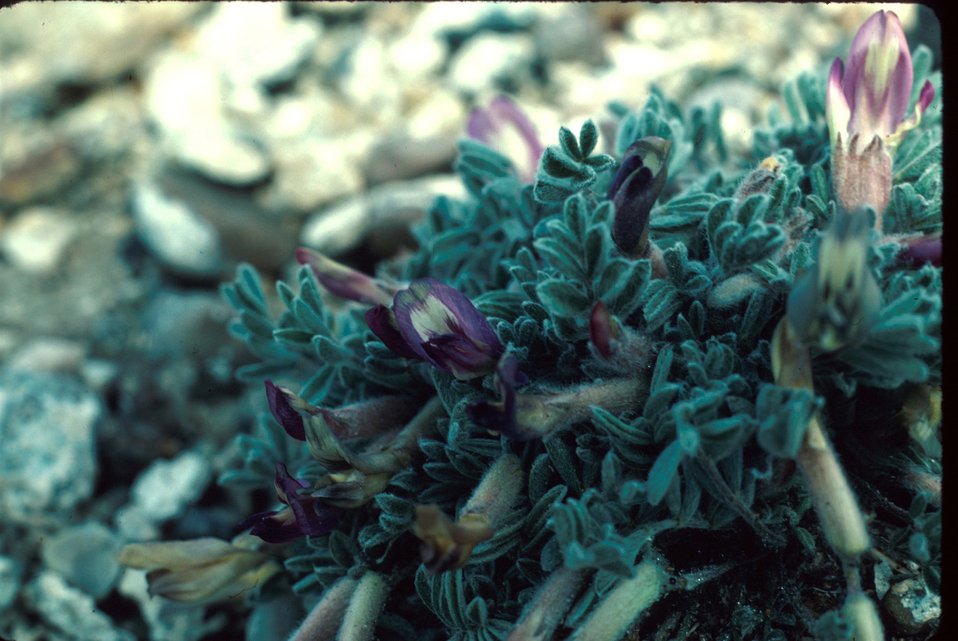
Oxyotropis parryi Wildflower